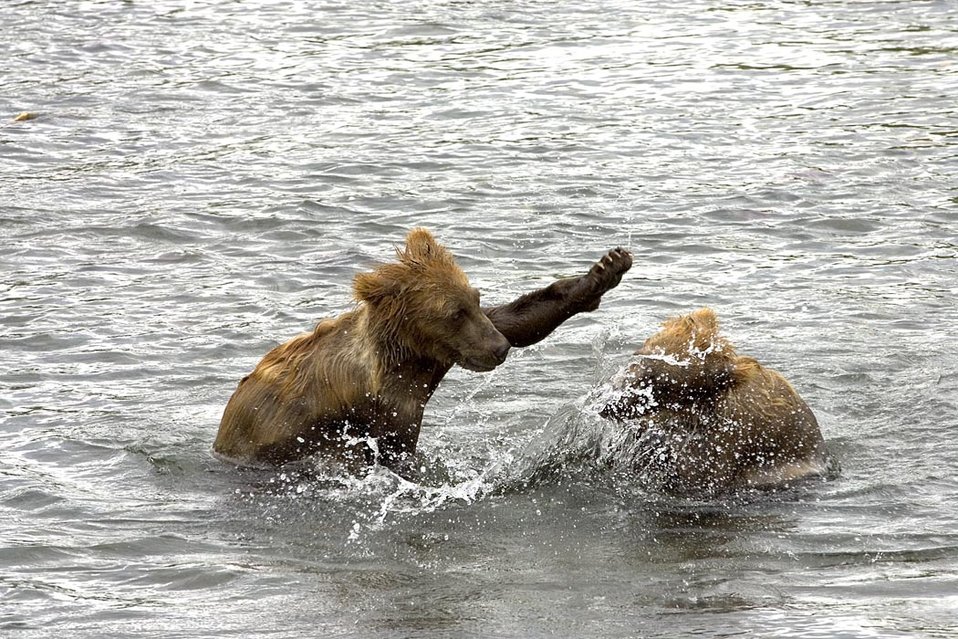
Brown bear cubs playing in water

Two grizzly bear cubs playing on their hind legs in the river with a lot of splashing.